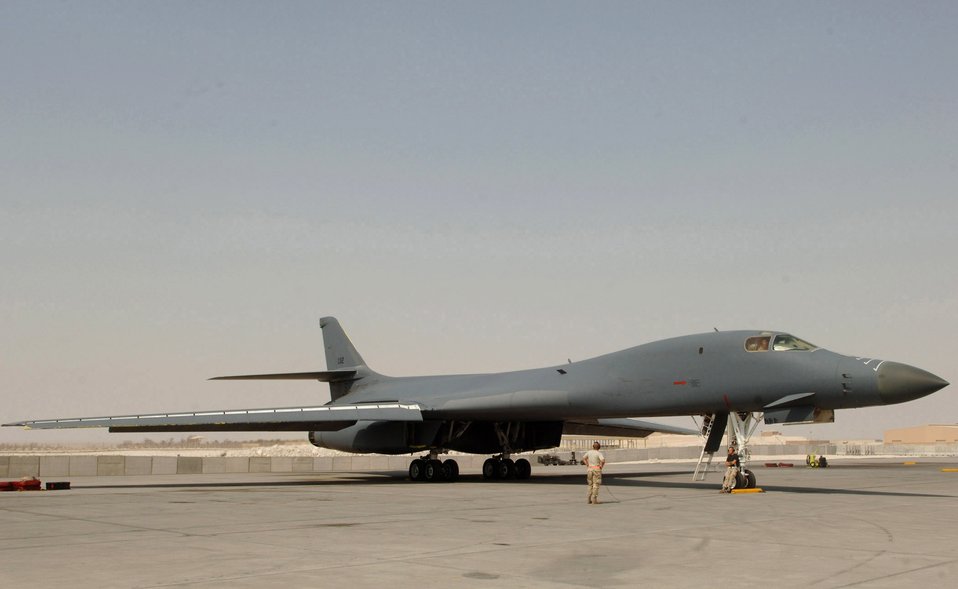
Sept. 5 airpower summary: B-1B supports close-air missions

A maintainer looks up at a B-1B Lancer at a base in Southwest Asia before a mission in the area of responsibility. B-1Bs fly close-air-support missions for both operation Enduring Freedom and Iraqi Freedom.